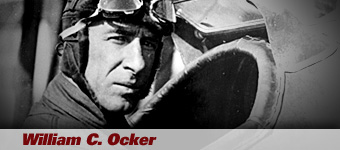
Col. William Ocker

Early aviation pioneer Col. William C. Ocker developed a turn-and-bank indicator with an artificial horizon that was used for instrument flying.